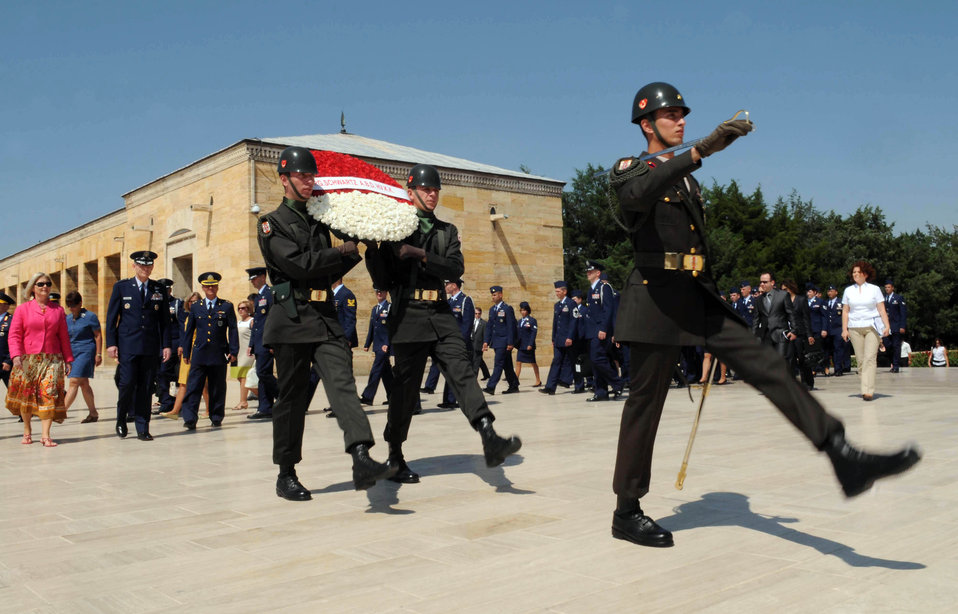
CSAF visits Turkey

Turkish soldiers carry a wreath on behalf of Air Force Chief of Staff Gen. Norton Schwartz and his wife Suzie during a wreath-laying ceremony July 19, 2010, in Ankara, Turkey. The ceremony honored Mustafa Kemal Ataturk, the founder of the Republic of Turkey, and took place at Anitkabir, Ataturk's memorial and mausoleum. Airmen from local Air Force units accompanied the general and his wife in the ceremony. The ceremony was the first event during General Schwartz's multi-day visit to Turkey.